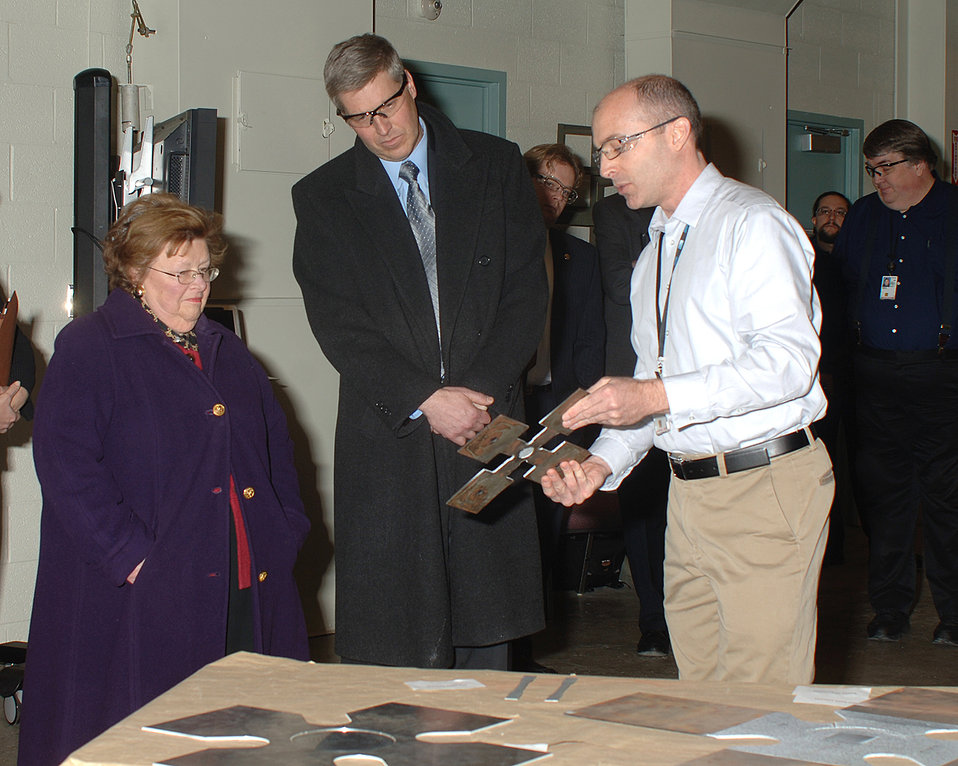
Senator Mikulski Tours Lightweighting

U.S. Senator Barbara Mikulski and NIST Director Patrick Gallagher hear a presentation from NIST researcher Mark Iadicola as part of tour of the NIST Center for Automotive Lightweighting.